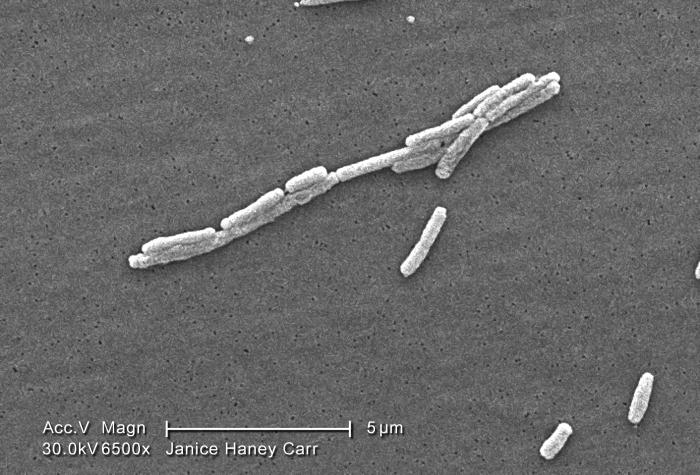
Under a moderately-high magnification of 6500X, this scanning electron micrograph (SEM) depicted a number of Gram-negative Legionella pneumophila bacteria. Please see PHIL 11092 through 11152 for additional SEMs of these organisms, specifically PHIL 11116 for a colorized version of this image. Some views in this series reveals the presence of flagellar appendages.